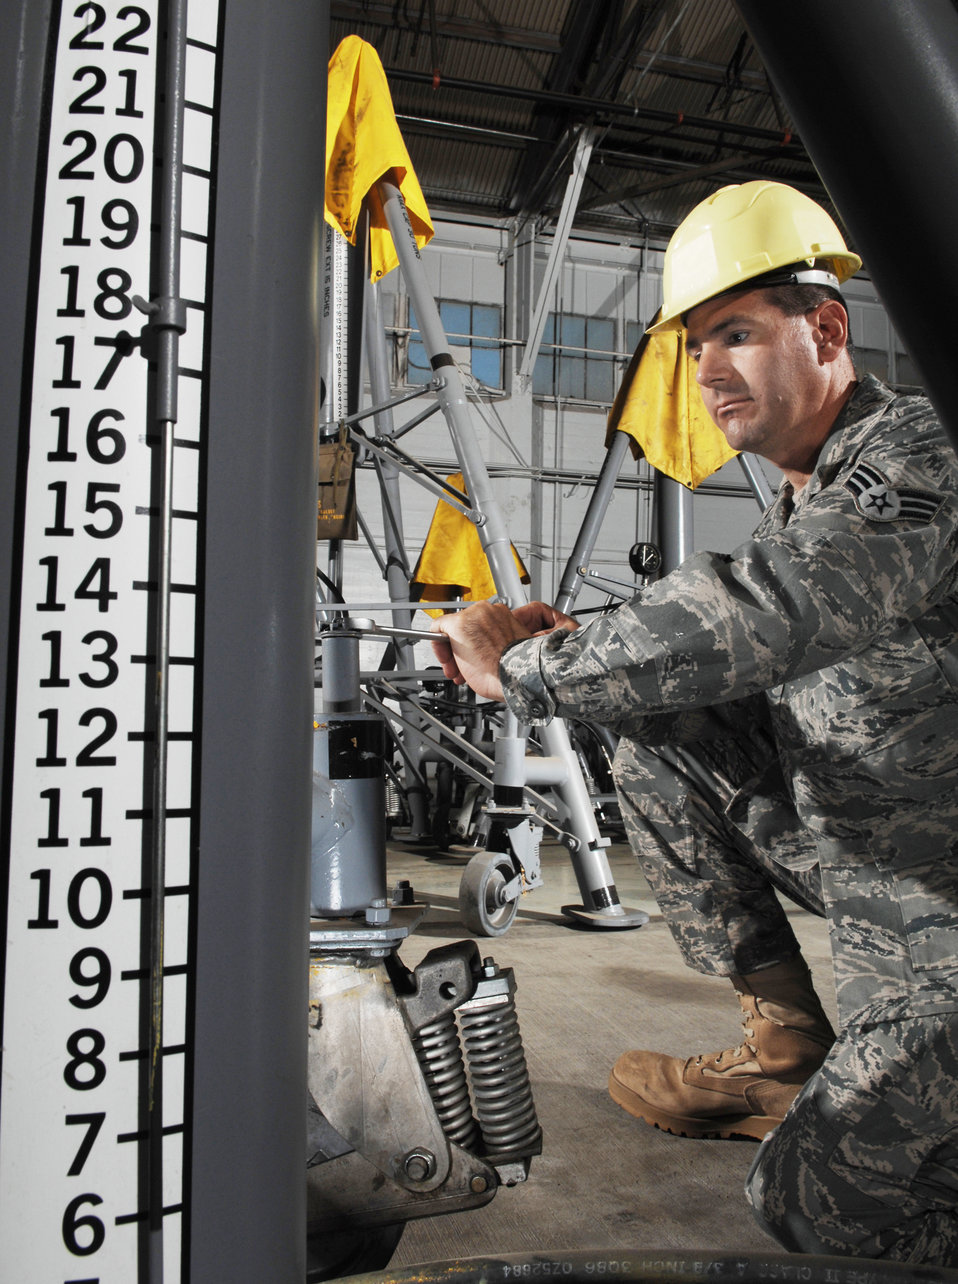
Let's twist...

Senior Airman Kevin Pleasant tightens a bolt on a KC-135 Stratotanker jack during an annual inspection July 21 at March Air Reserve Base, Calif. Airman Pleasant is an aerospace ground equipment technician with the 452nd Maintenance Squadron.